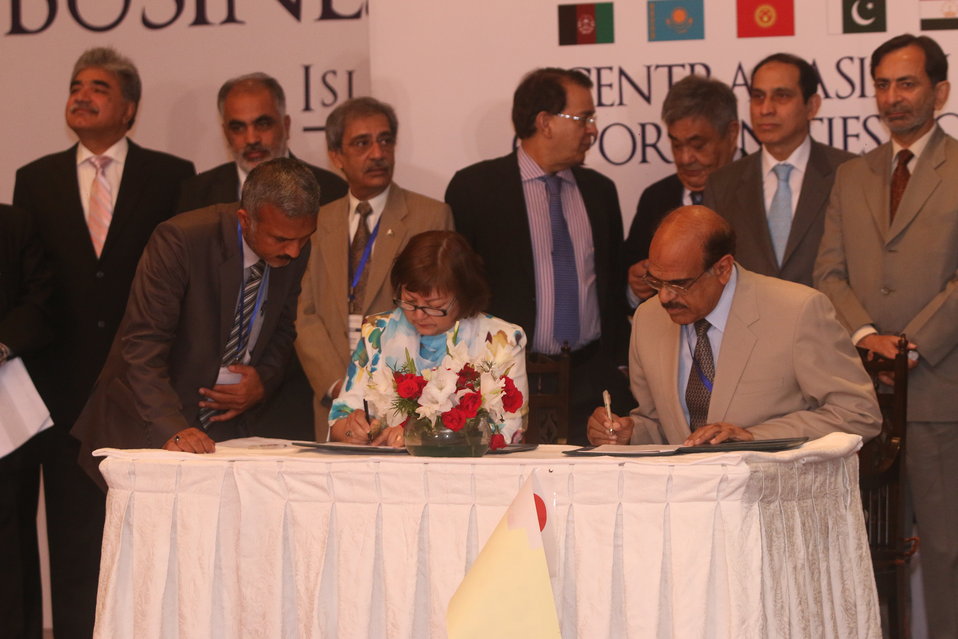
CABOC 2014